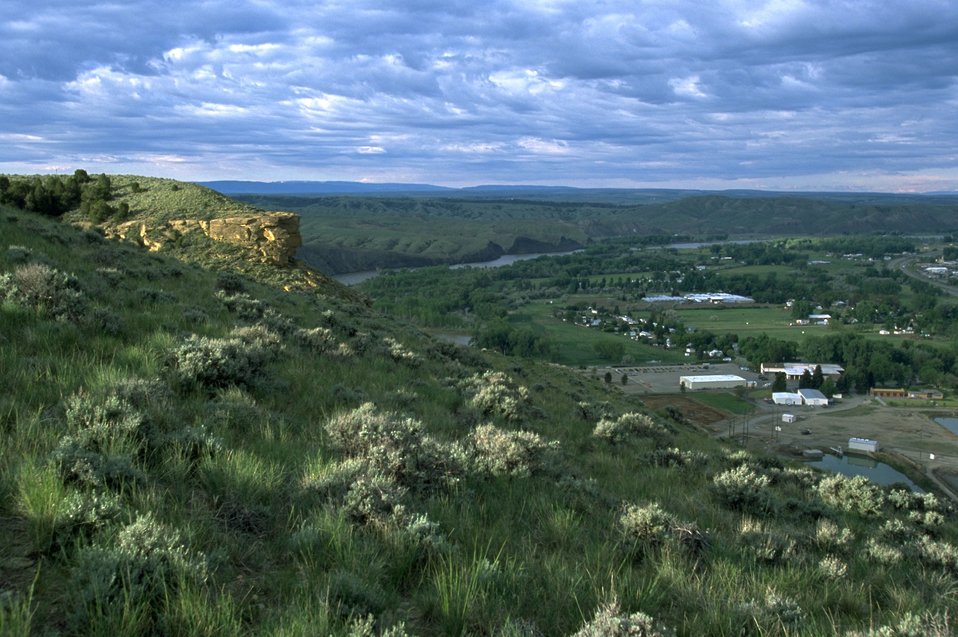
View to the southwest towards the South Hills from the upper Four Dances Natural Area